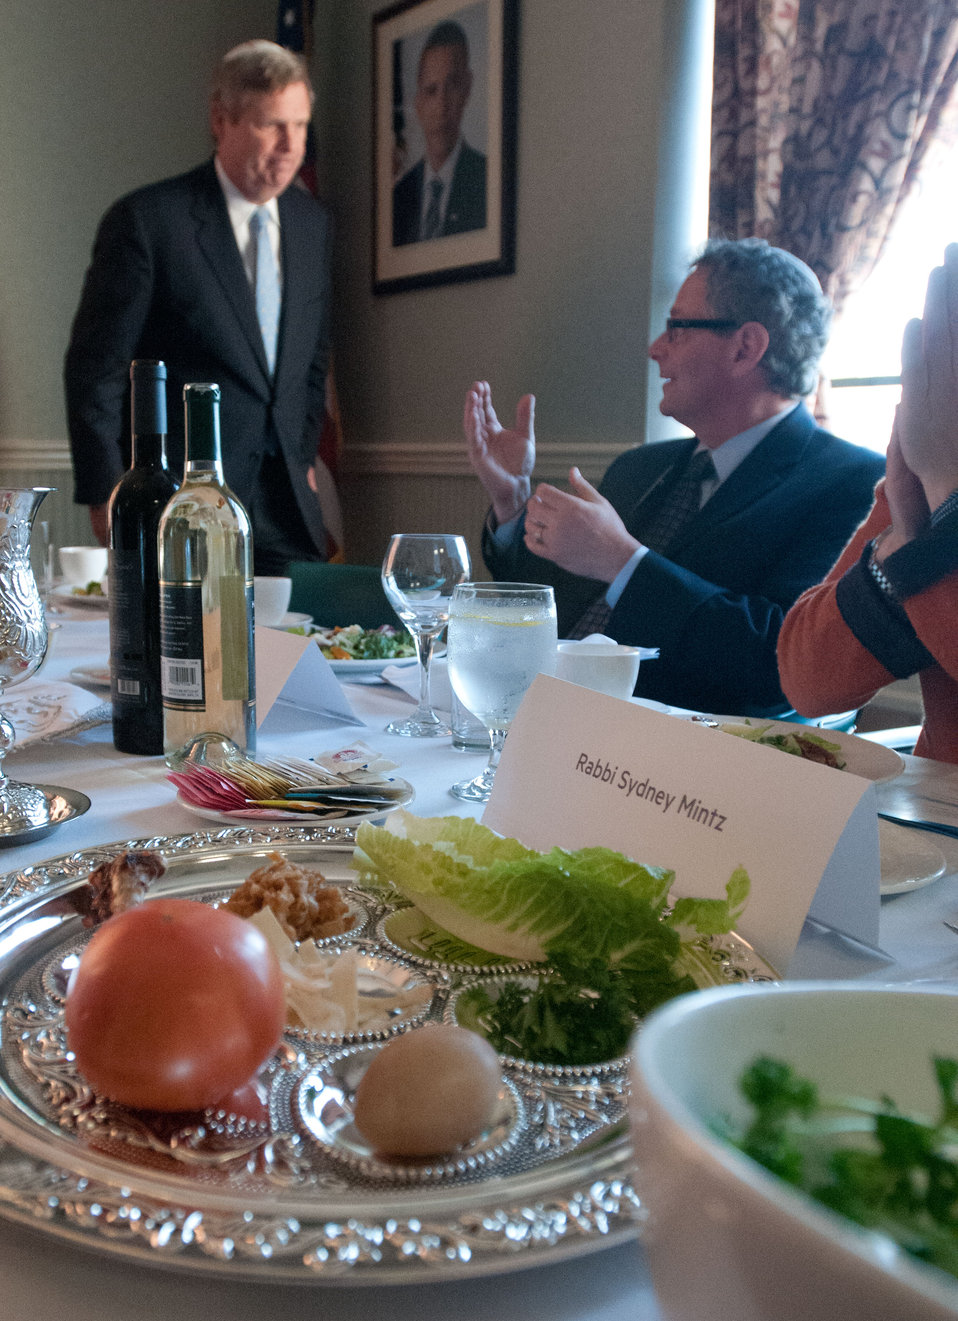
Agriculture Secretary Tom Vilsack received applause as he concluded his talk, during the Food and Justice Passover Seder, at the U.S. Department of Agriculture headquarters in Washington, D.C., on Wednesday, April 4, 2012.